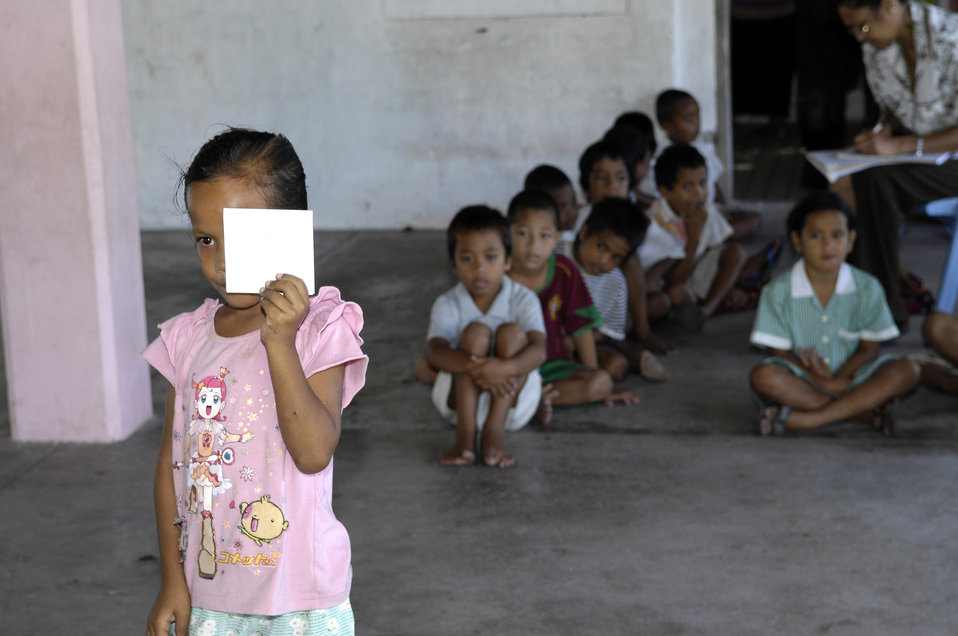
Joint team works to improve care in Nauru

A first grader covers one eye while reading the vision chart to test her vision July 22 on the island of Nauru. A 12-person, joint-force U.S. Pacific Command team of medical professionals are deployed to the island July 21 through 28 to provide training and assistance to the island's medical professionals.